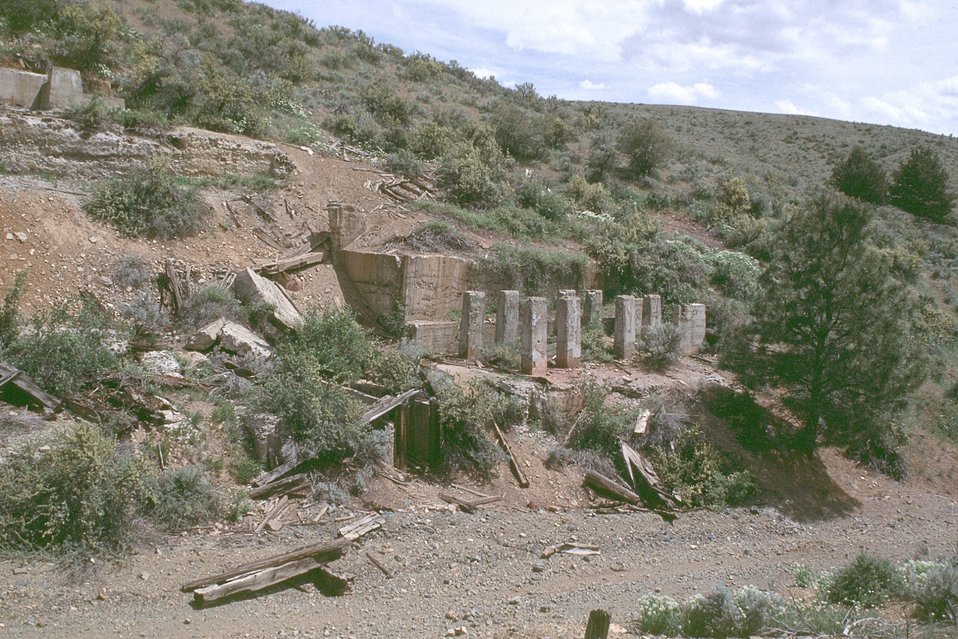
Foundation of abandoned mine works building at AML Poorman Mine, Vale District, Oregon.